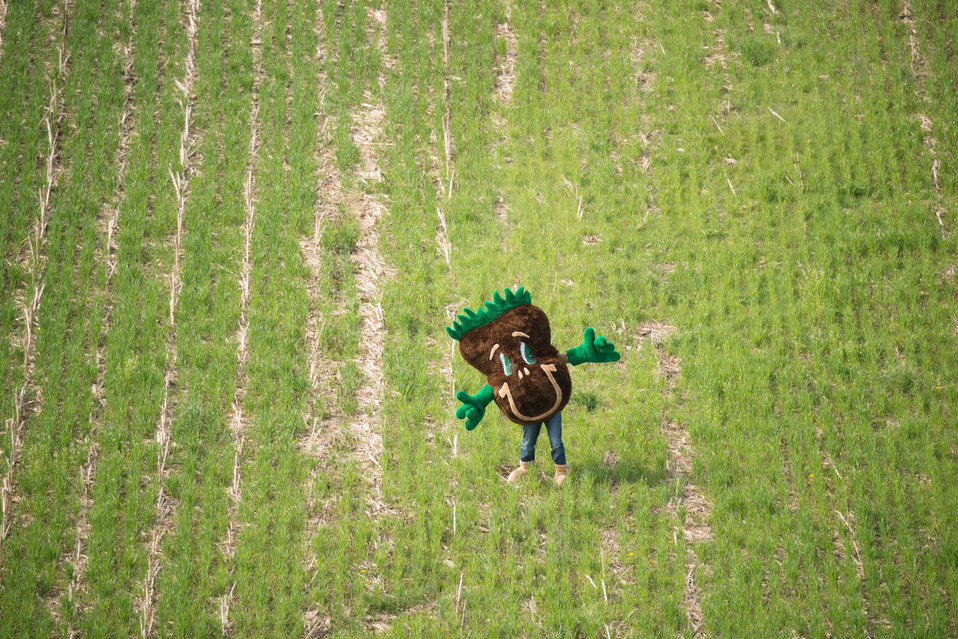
The U.S. Department of Agriculture’s (USDA) Natural Resources Conservation Service (NRCS) mascot Sammy Soil on the Sunny Ridge Farm in Laytonsville, MD on Monday, Apr. 28, 2014. The Sunny Ridge Farm owned by the Stabler family uses a number of conservation practices to promote soil health and water quality. No-till cropping systems use cover crops that help water soak deep into the soil and machines work lightly on top of the soil preserving vertical pores that are water’s pipeline to the roots. Cover crops prevent erosion, improve soil health, hold water, supply nutrients, and suppress weeds and pests. Fenced waterways keep livestock away from the streams and drainage to low points of fields, which allows grass, trees and other vegetation to grow. The plants take up nutrients from the livestock effluent, reducing pollution to waterways. The farm also has a well-designed agrichemical facility for an environmentally safe area to handle and store tanks of on-farm chemicals.